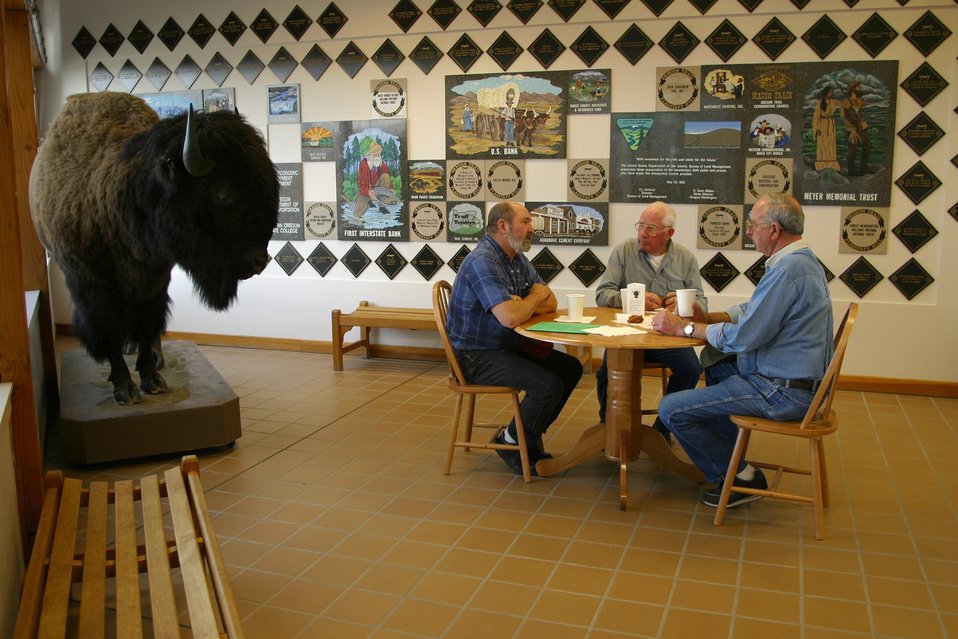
Visitors can relax and view contributor's tiles in the National Historic Oregon Trail Interpretive Center.